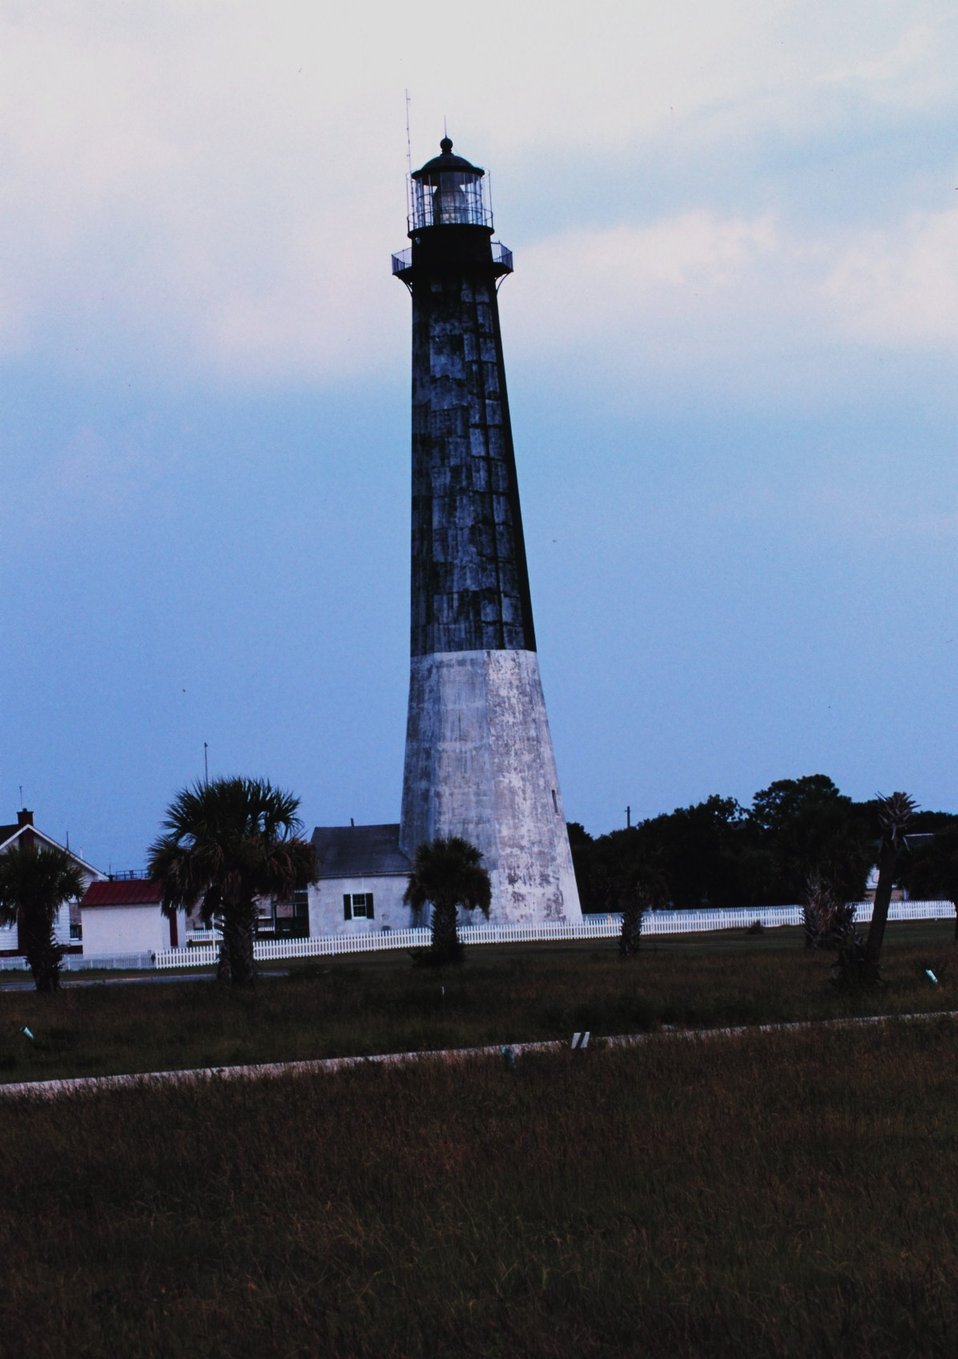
The lighthouse at Tybee Island